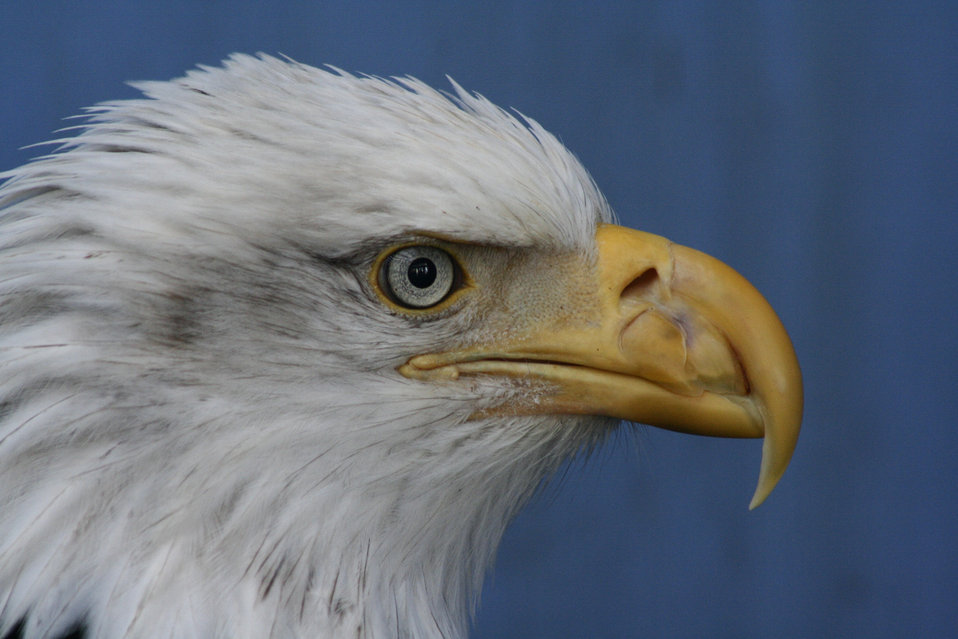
Bald eagle at John Heinz National Wildlife Refuge, Philadelphia, PA.